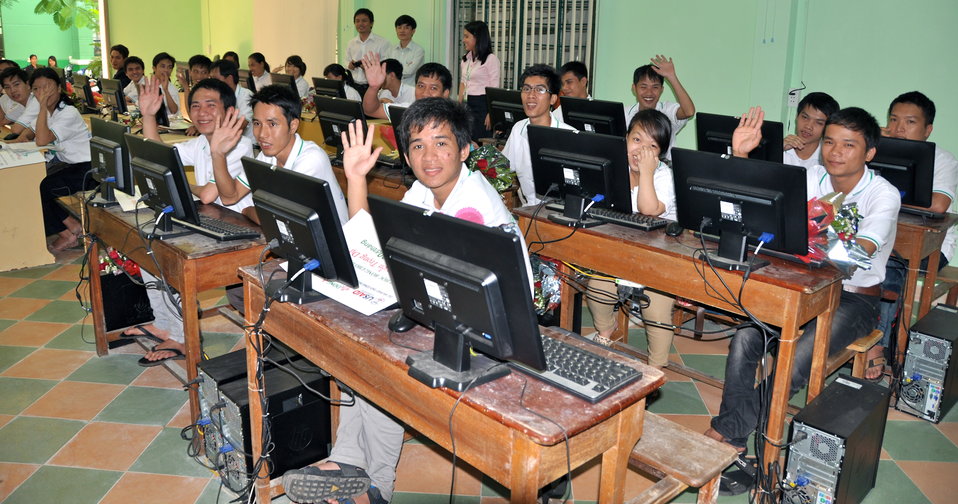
New class of students starts at Dong A Univeristiy with support from USAID and CRS

Photo: @USAIDVietnam
December 3, 2012